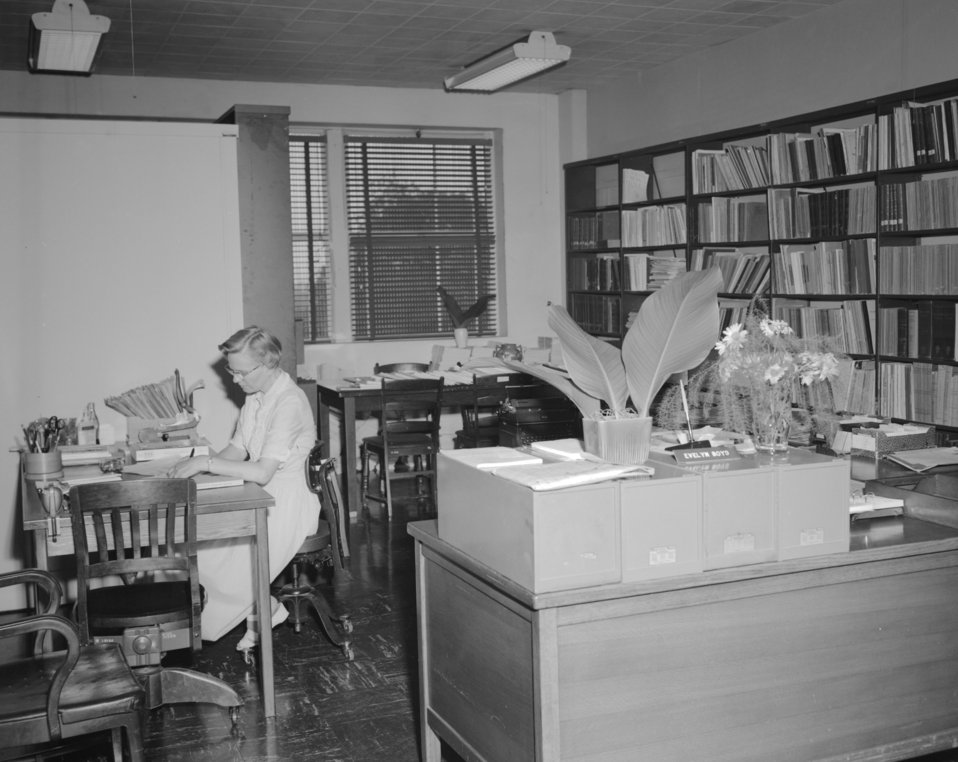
A 1958 photograph of a CDC Librarian.